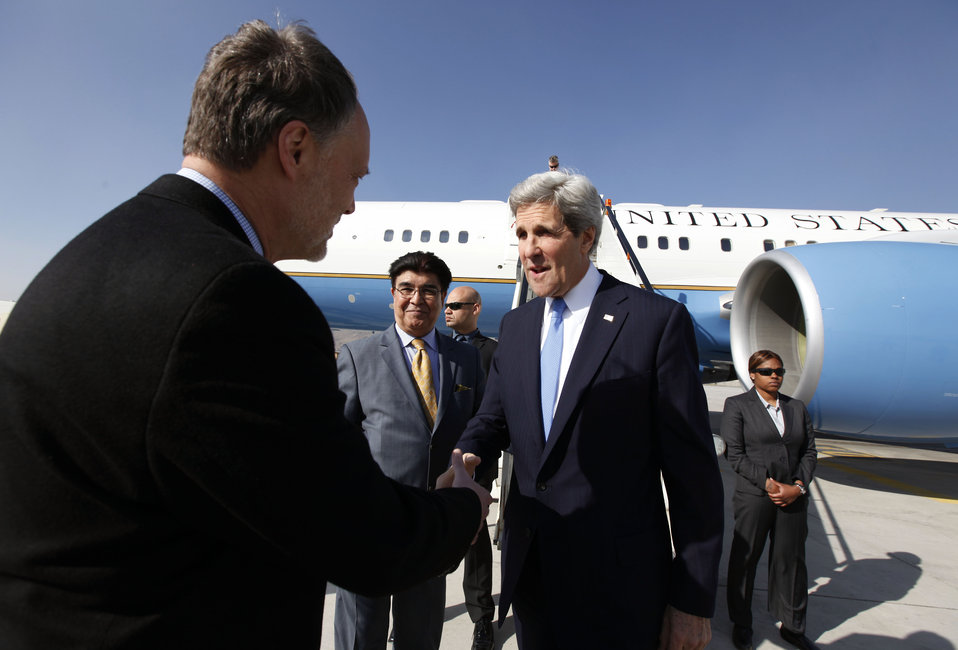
Secretary Kerry Arrives in Afghanistan

U.S. Secretary of State John Kerry shakes hand with U.S. Ambassador to Afghanistan James B. Cunningham after arriving at the Kabul Airport in Kabul, Afghanistan, on March 25, 2013.